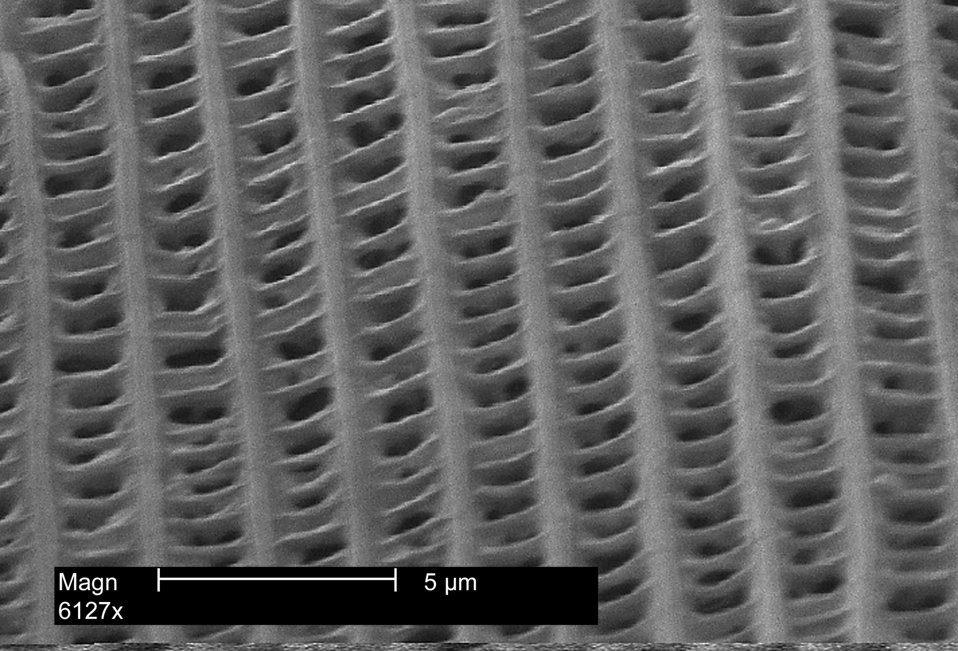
A highly magnified single scale strut-like pattern from a butterfly's wing magnified 6127x.